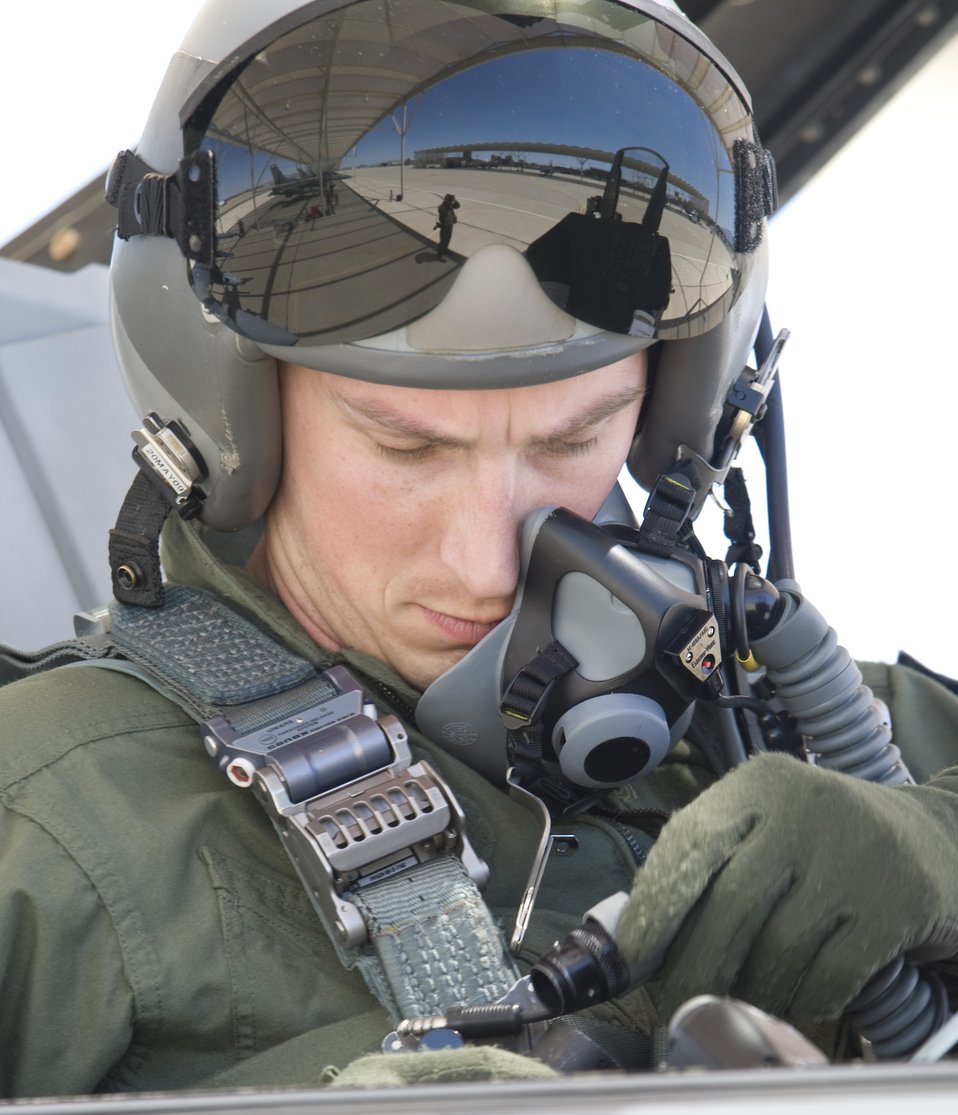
Airmen train next generation

1st Lt. Scott Kotowski connects his oxygen mask to the oxygen regulator in his F-16 Fighting Falcon prior to engine start April 23 at Davis-Monthan Air Force Base, Ariz. Lieutenant Kotowski is one of nine active-duty student pilots participating in Exercise Coronet Cactus. He is assigned to the Air National Guard’s 149th Fighter Wing in San Antonio.